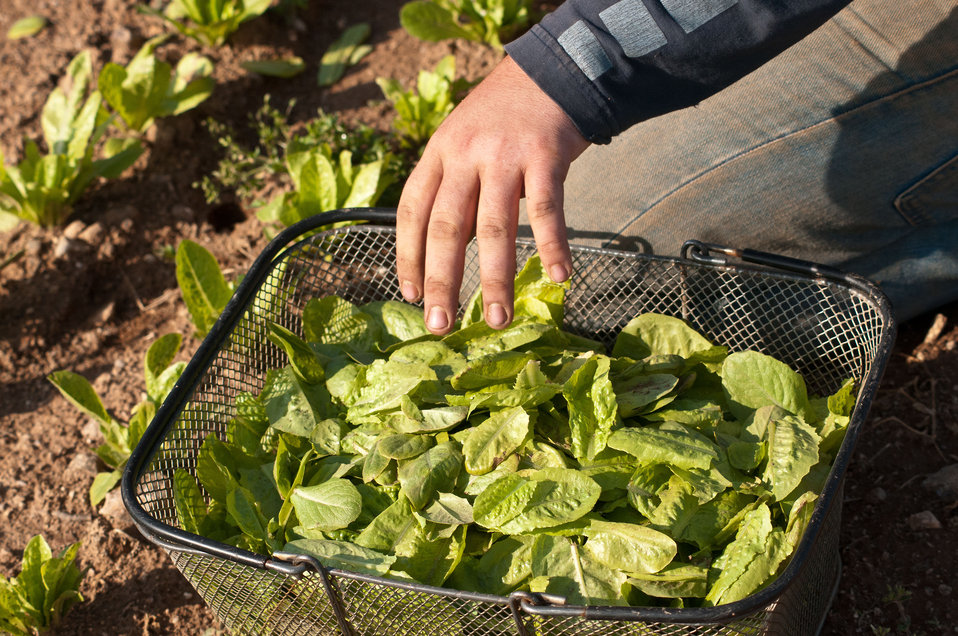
Christopher Douherty gently harvest baby-lettuce leaves for the popular mixed greens salad mix for Manakintowne Specialty Growers, a 21-acre farm in Powhatan County, Virginia, on Friday, May 6, 2011. The farm where Jo Pendergraph, her family and team raise specialty produce for chefs and markets of Richmond, Charlottesville and Williamsburg, VA area. This includes the online food hub of Lulus Local Food served by the Fall Line Farms cooperative. This is one of the farms that chefs get those seemingly unique greens such as French Sorrel, Pea Shoots, Frisee, Tat soi, Mizuna, Pink/green radish shoots, Sunflower shoots, Baby red mustard, Tuscan Kale, Beet greens. All harvested by hand and scissors. As well as micro greens such as Pak choi, Tat soi, Mizuna, Purple kohlrabi, Shungiku (edible chrysanthemum), Ruby chard, Purple/Daikon/Triton radish, Red amaranth and Bull's Blood Beet. Edible flowers such as African Blue Basil, Nasturtiums, Johnny Jump Ups, and Chive blossoms Dianthus (pinks) are grown here. The seasonal choices are listed by suppliers and ordered by members on Lulus Local Food website, the food is distributed to pick-up points in the Richmond, VA area. They also offer a wide variety of household food staples and specialty fruits, vegetables, meats, soaps, eggs, cheeses, flowers, honey, pastas, sauces, syrups, baked goods, mushrooms, flour and grains from and for the Richmond. VA area.